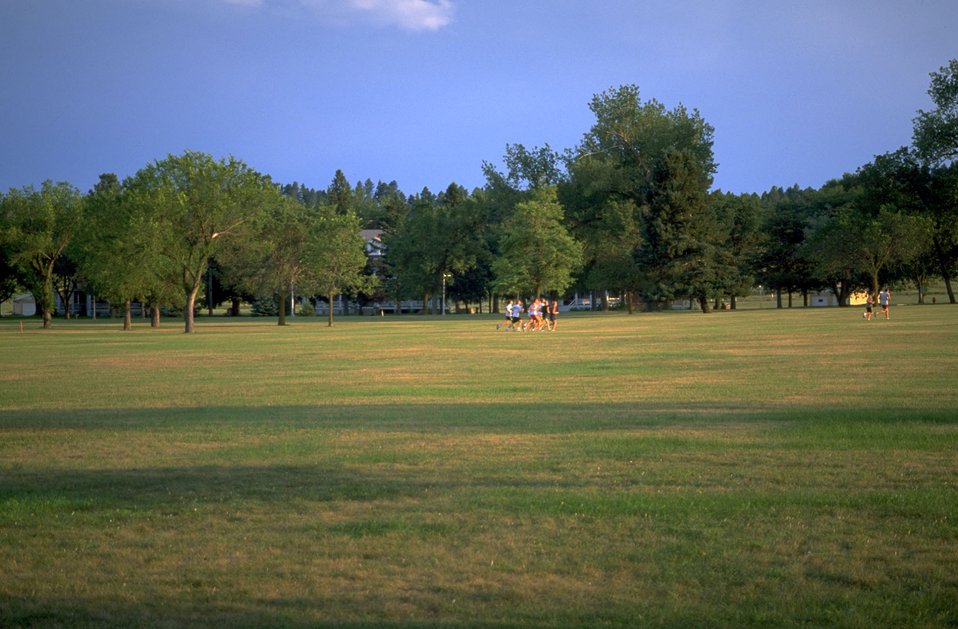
Parade Grounds at the Veterans Administration complex at Fort Meade